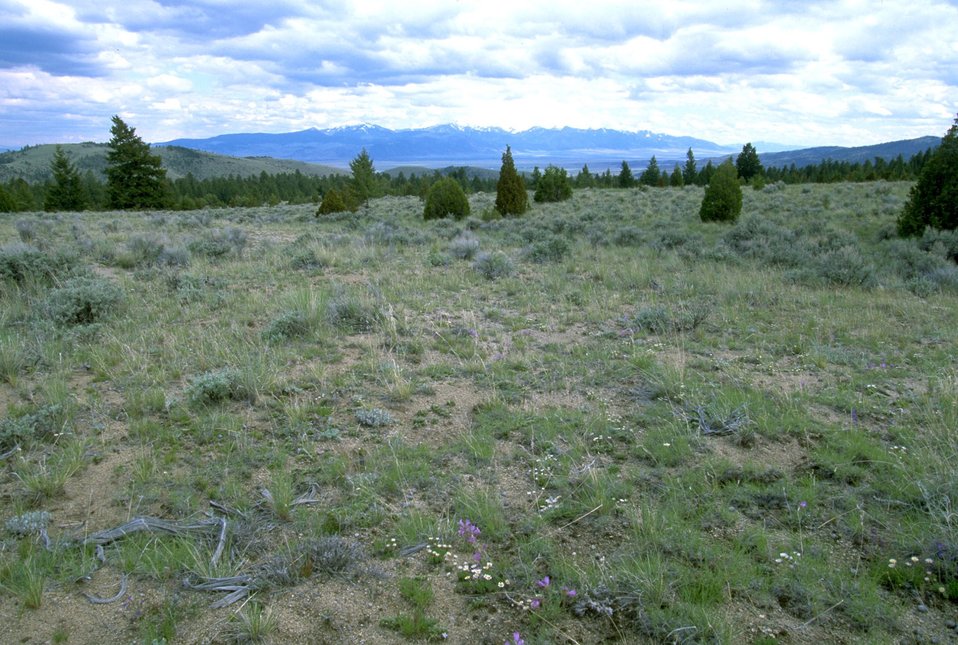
Wildflowers and grass with mountains in the distance